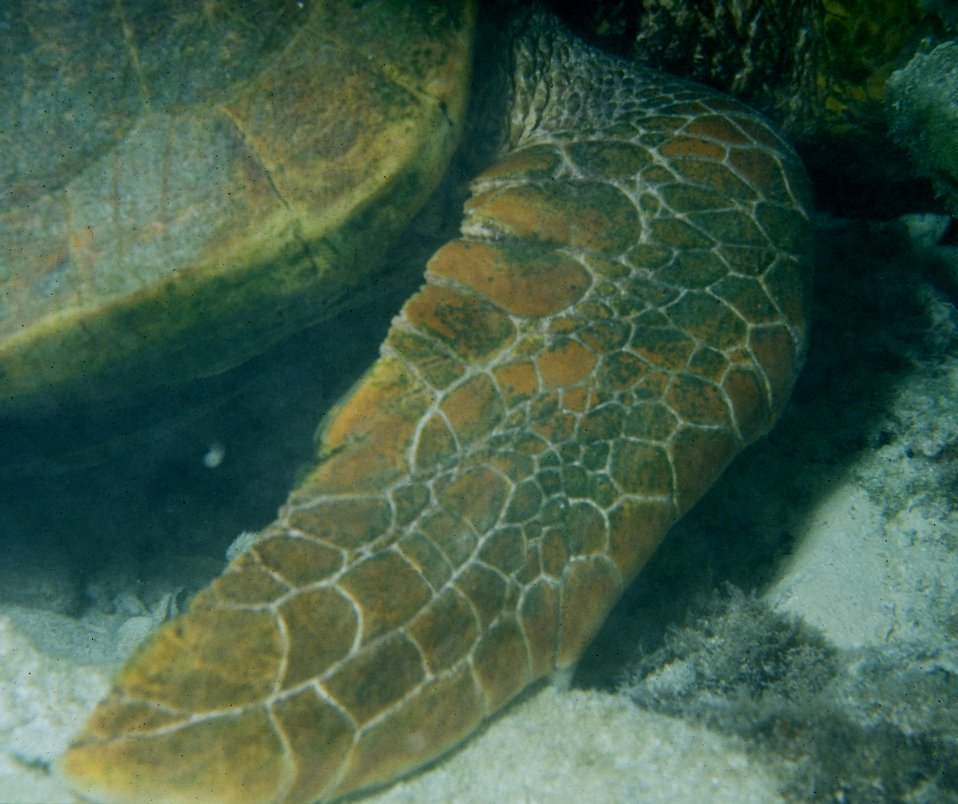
One Tree Reef. Green sea turtle (Chelonia midas).